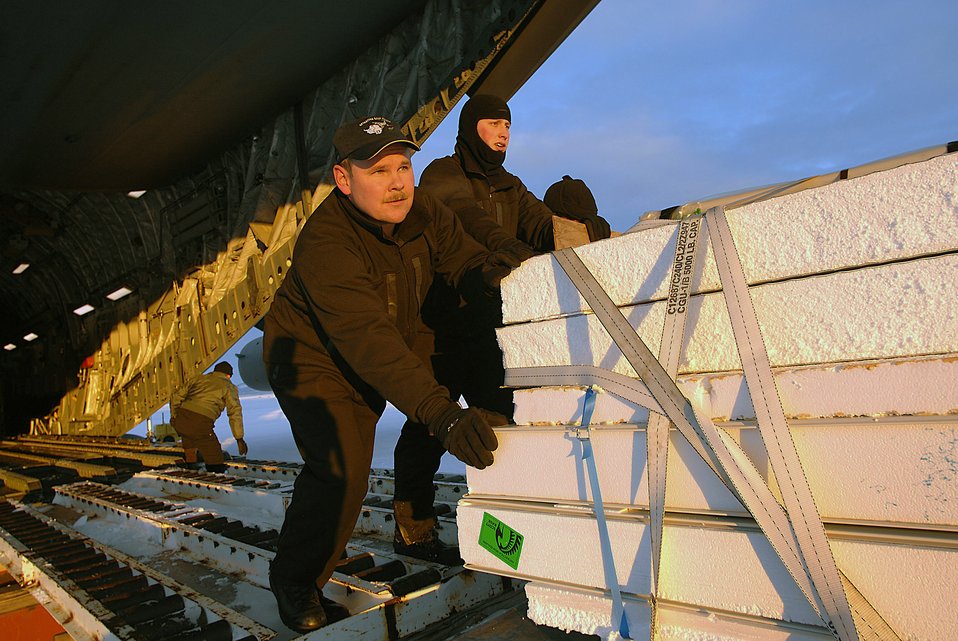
Reserve, active-duty Airmen fly late-season Deep Freeze mission

Senior Master Sgt. Lance Gustafson (left) and Senior Airman Douglas Reimer offload pallets from a C-17 Globemaster III in Antarctica on April 17. The two loadmasters are part of a Total Force crew from the Reserve 446th Airlift Wing and the active-duty 62nd Airlift Wing at McChord Air Force Base, Wash. The C-17 is staging out of Christchurch, New Zealand on a final Operation Deep Freeze for the 2007-2008 season.